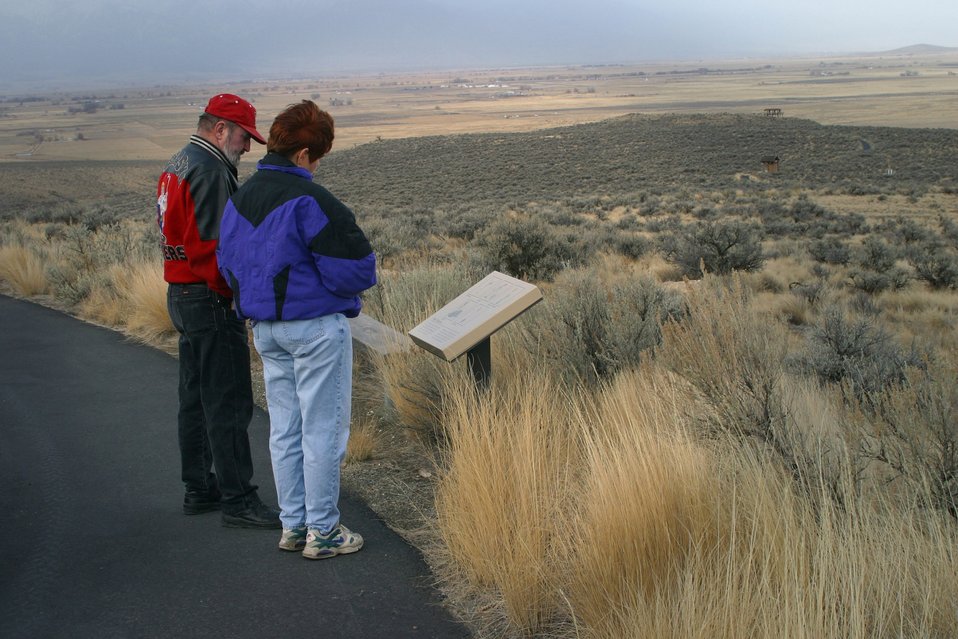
Intepretive signes along the Center's trails help tell the story of the area.